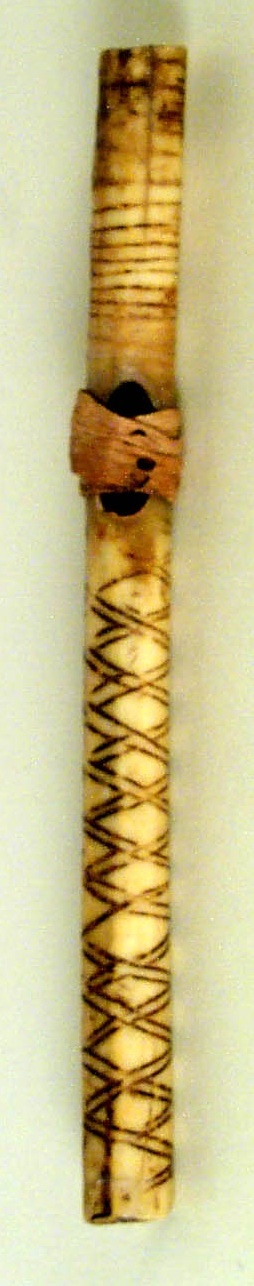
Fragment, flute, bone